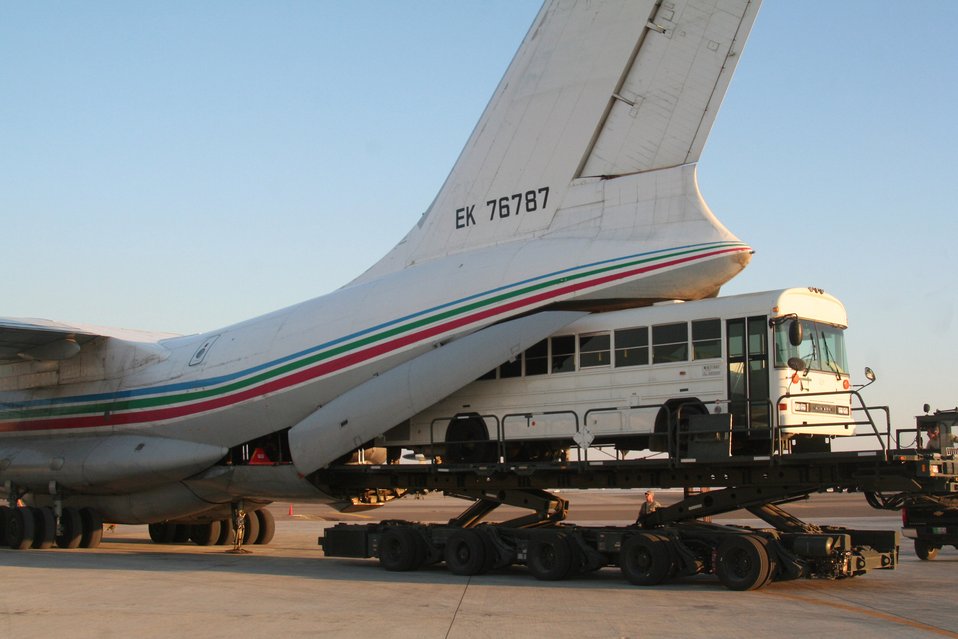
Aerial porters load American buses on Russian-made transport

Air transportation Airmen load a 44-passenger bus onto a Russian-built IL-76 transport plane during operations Dec. 30, 2009, at an air base in Southwest Asia. The bus was one of two that were loaded on the IL-76 for transport to Afghanistan. The Airmen are assigned to the 380th Expeditionary Logistics Readiness Squadron.